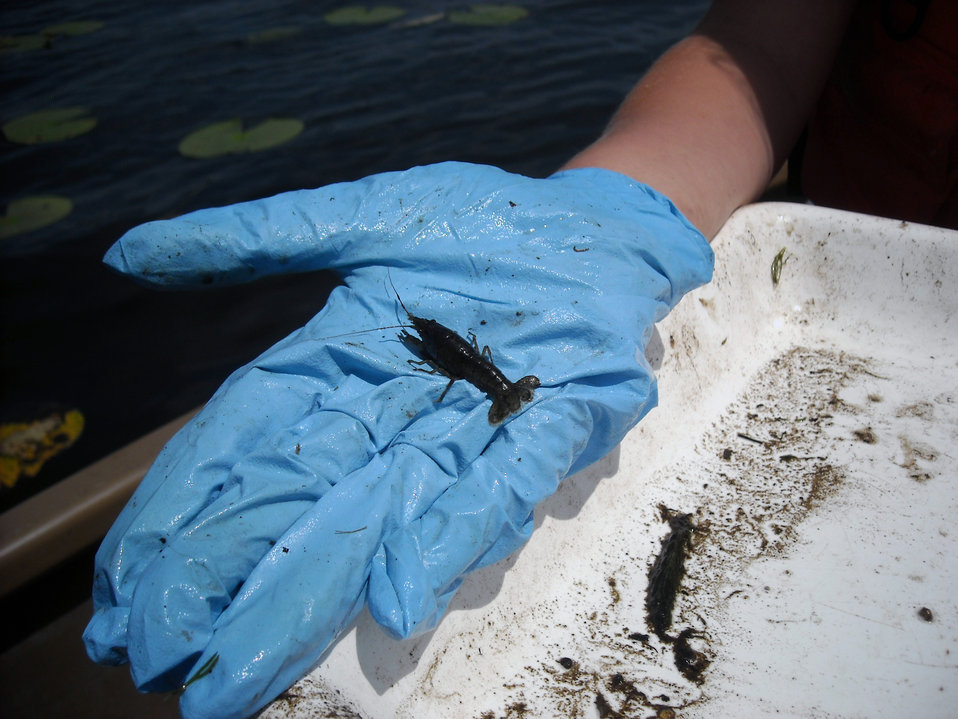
Crayfish

A crayfish got pulled up along with some plants!